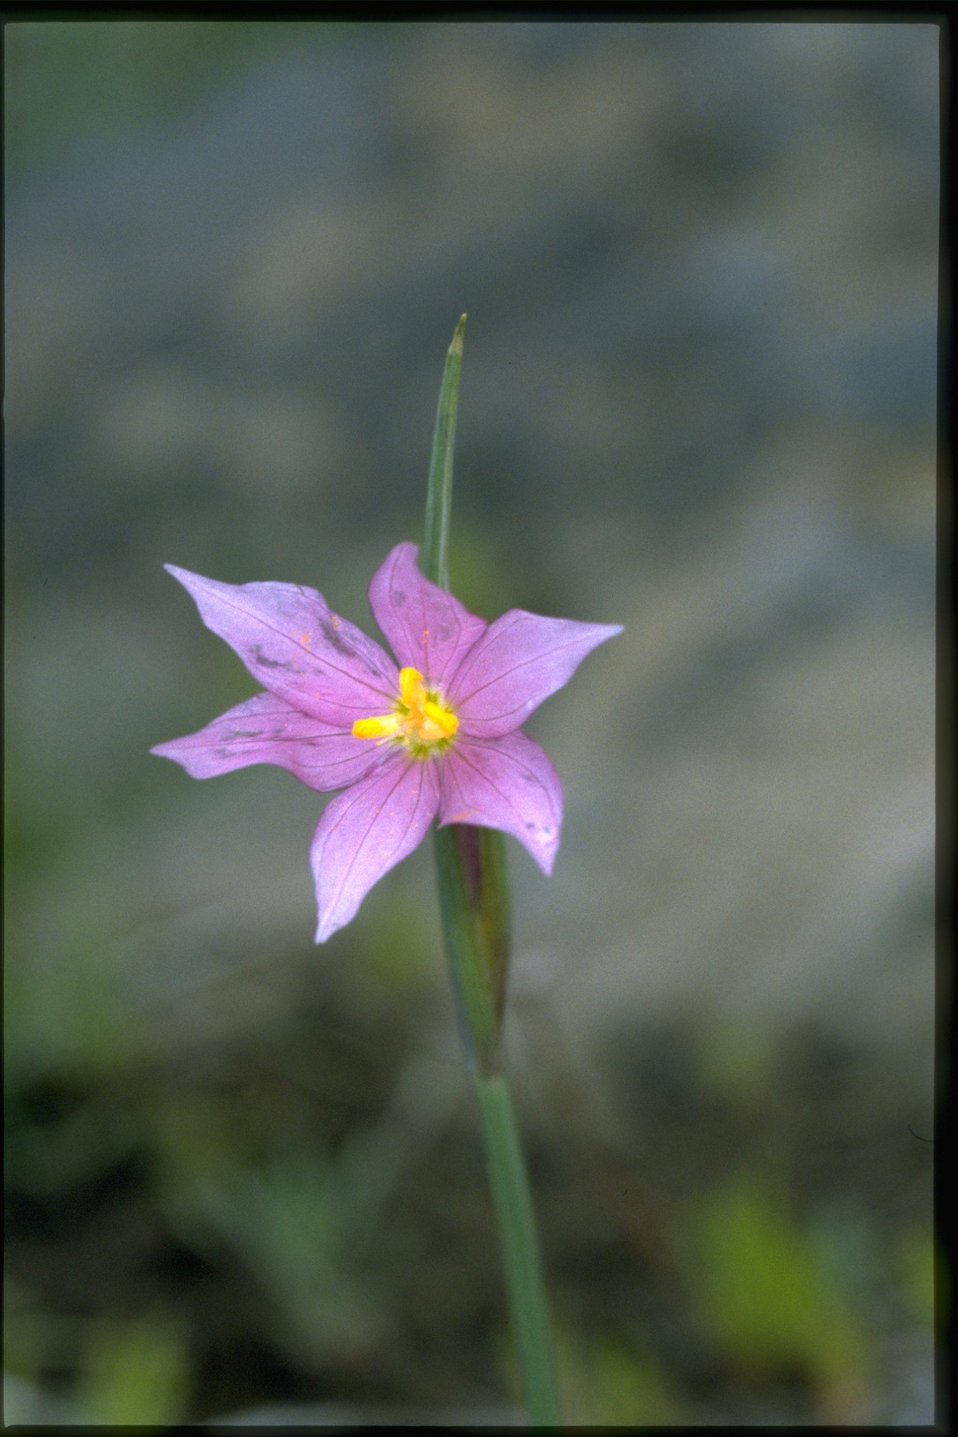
Closeup shot of Grass Widow, Sisrinchium douglasii, wildflower